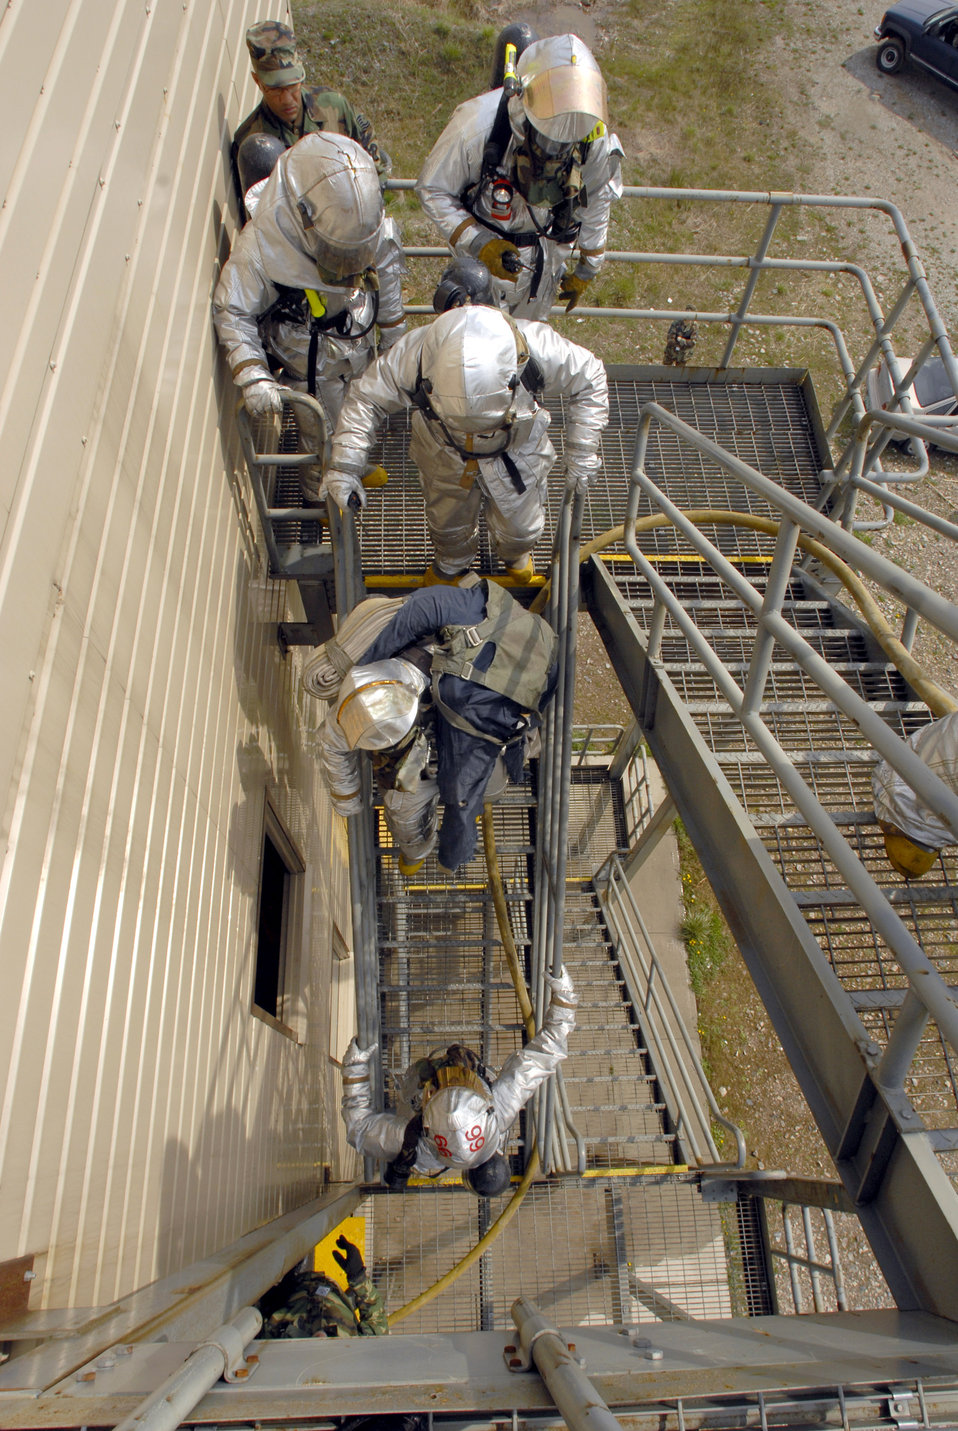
Into the fire

Firefighters from the 8th Civil Engineer Squadron climb stairs to respond to a simulated fire during an operational readiness inspection April 17 at Kunsan Air Base, South Korea. Kunsan AB is currently undergoing an operational readiness inspection to test the 8th Fighter Wing's ability to conduct its wartime mission.